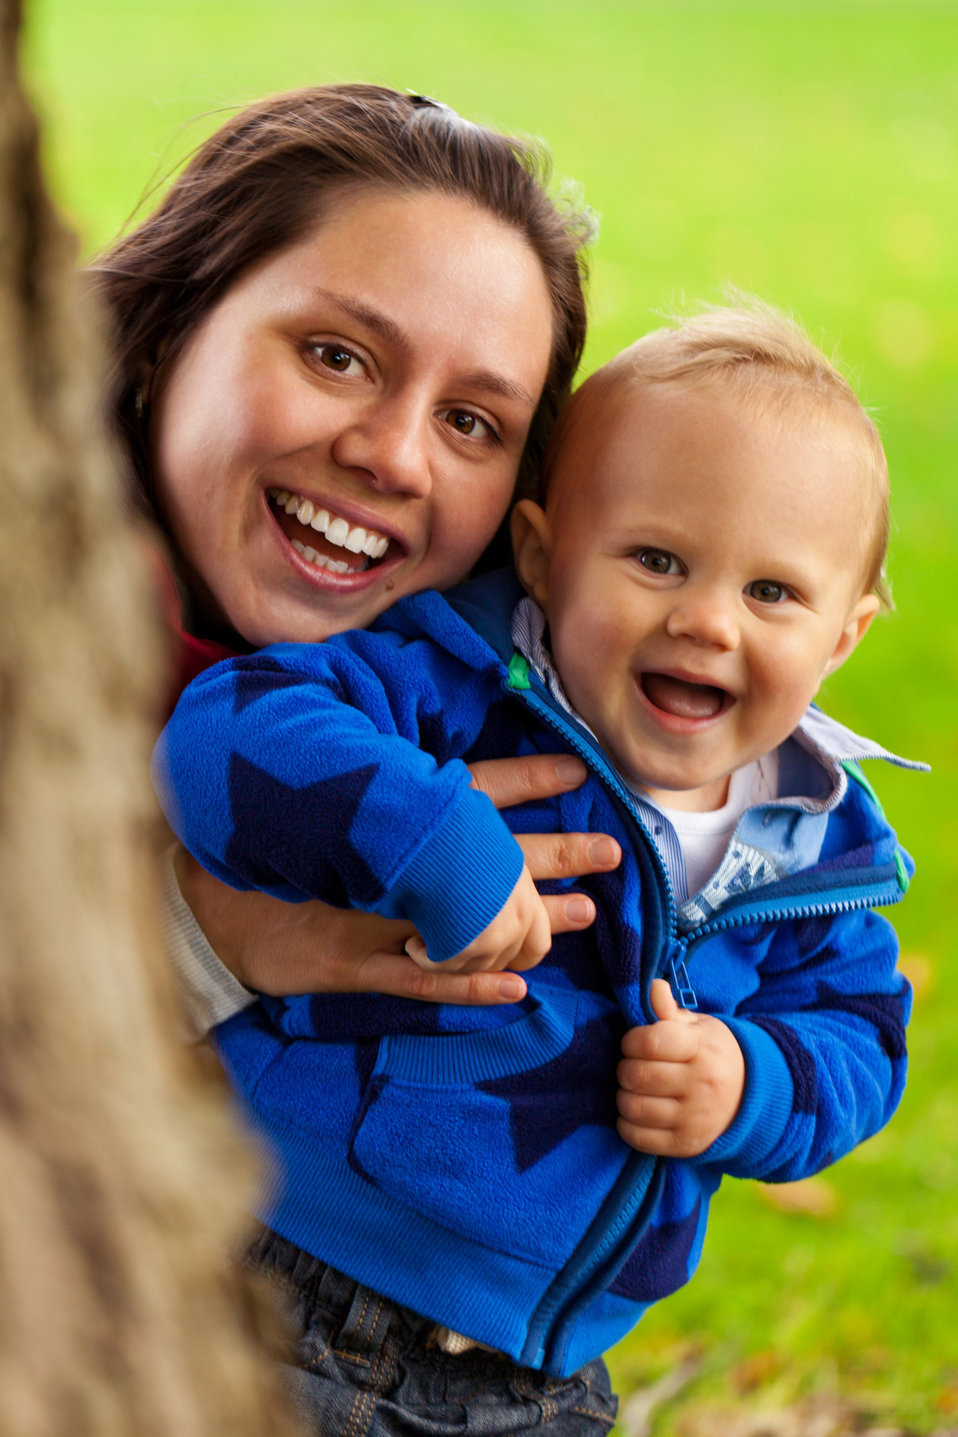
Mom and baby boy in park

Mom and baby boy are playing in a park.